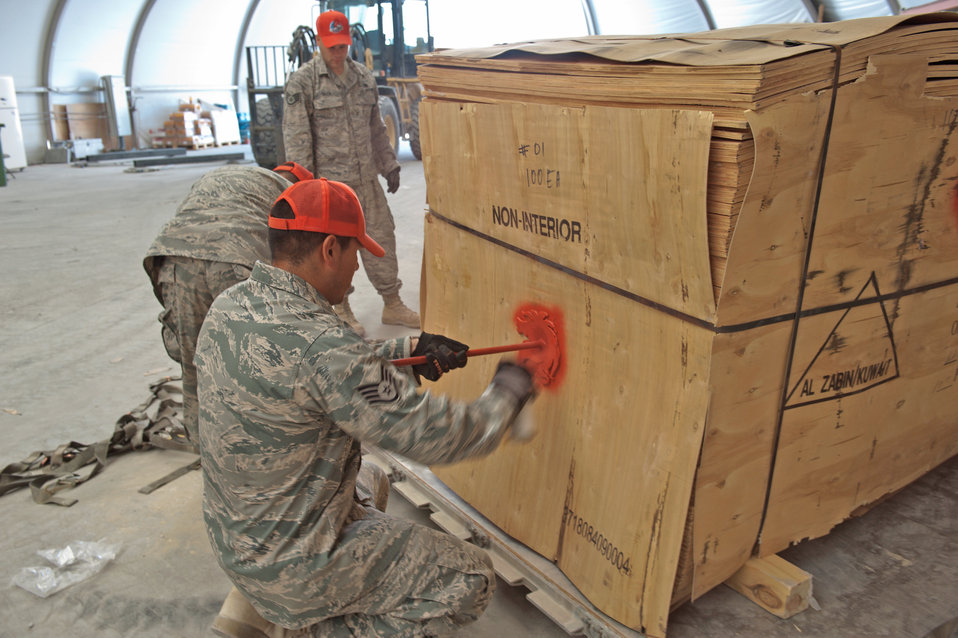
Airmen build bare bases 1 pallet at a time

Staff Sgt. Dennis Urruchi marks a pallet for palletizing and shipping Sept. 15, 2009, at an air base in Southwest Asia. Sergeant Urruchi is a 1st Expeditionary RED HORSE Group electrical craftsman. He along with fellow servicemembers of the logistics and pallet build-up team, support all RED HORSE operations downrange by obtaining and shipping required equipment for mission success. Sergeant Urruchi is deployed from Peterson Air Force Base, Colo.